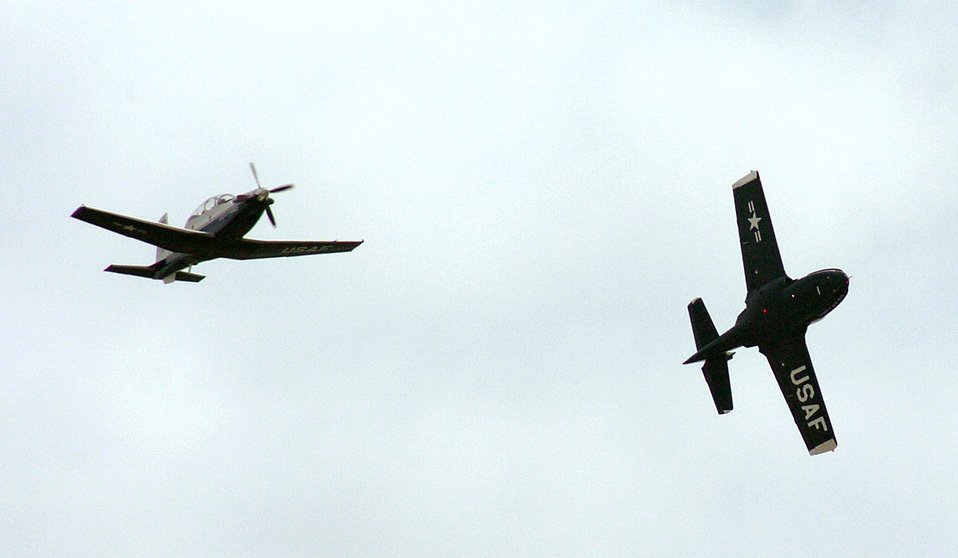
Tweet closes 42-year Randolph career

The last Randolph T-37B Tweet peels off to the west while a T-6Texan II flies ahead symbolizing the past and future of the primary pilot instructor training mission.